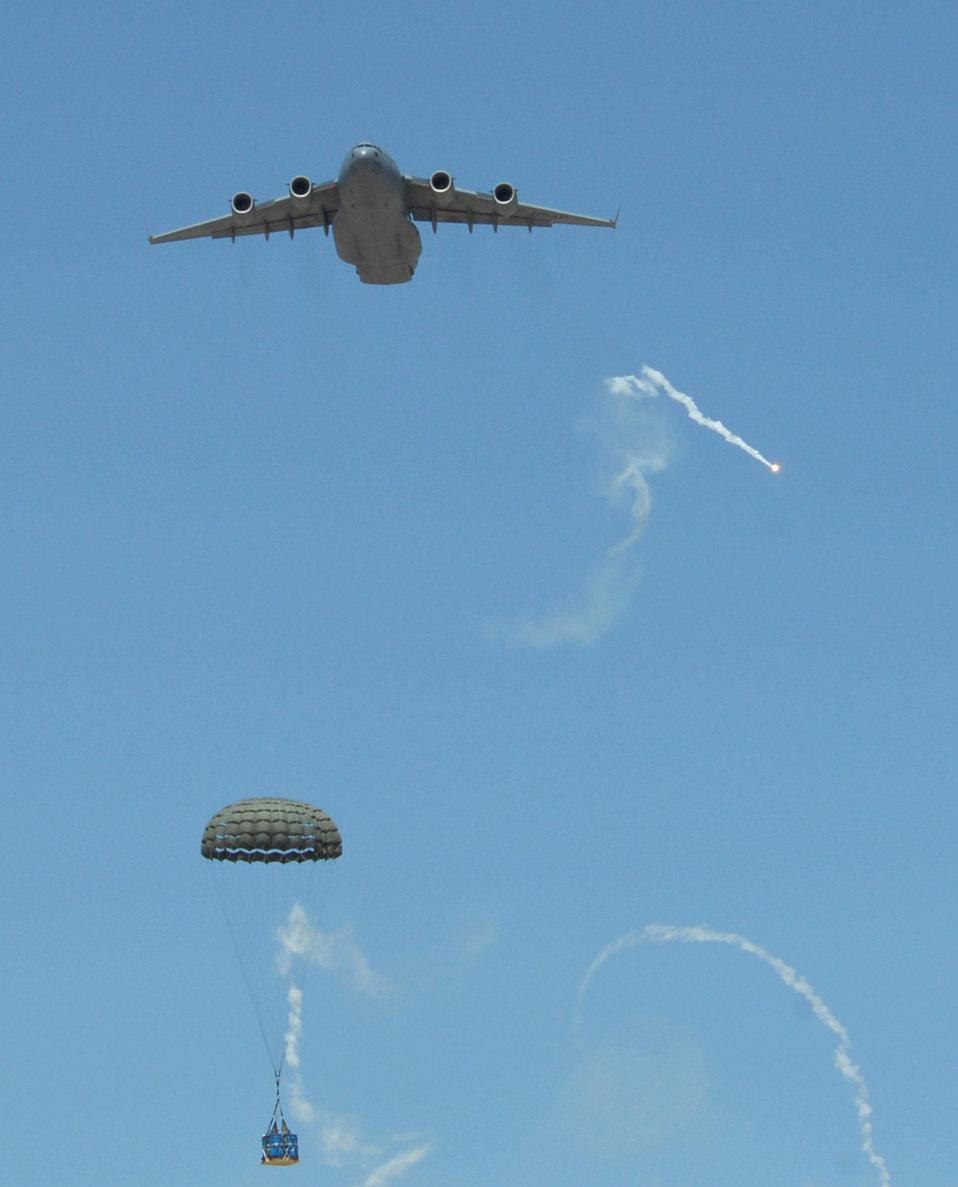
Testing mobility forces

A C-17 Globemaster drops a container delivery system over the drop zone May 20 while participating in the Mobility Air Forces Exercise at Nellis Air Force Base, Nev.